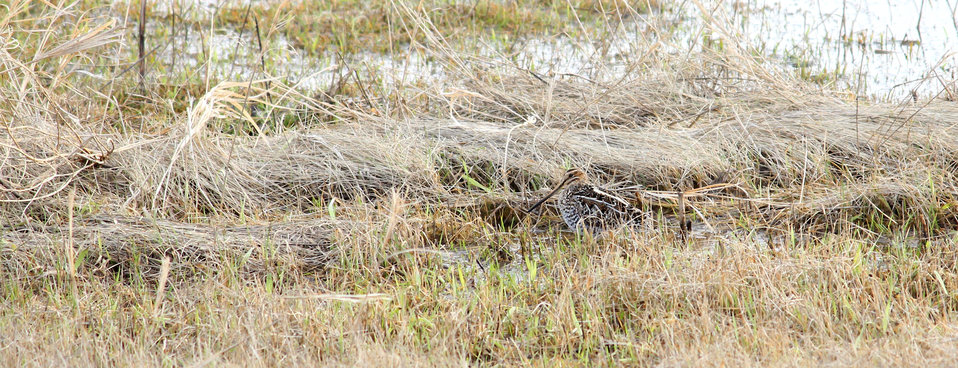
Wilson's Snipe

Snipe have superb camouflage, and unique parenting habits. Of the four eggs that are typically hatched, the male takes the first two chicks that hatch and leads them from the nest. The female will take the last two chicks that hatch. The two adults and their chicks are thought to have no contact after this separation.